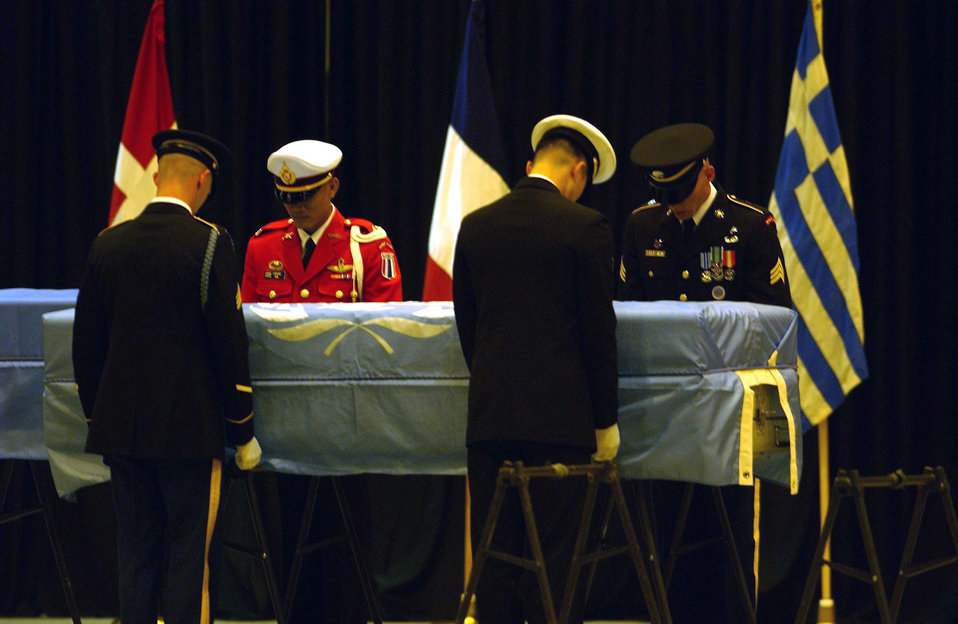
Paying respect

YOKOTA AIR BASE, Japan -- Members of the U.N. Honor Guard pay their final respect to remains believed to be those of U.S. soldiers during a repatriation ceremony here Oct. 28. Eight caskets, each draped in a pale blue U.N. flag, were carried by military honor guards into a hangar after being flown in from North Korea.